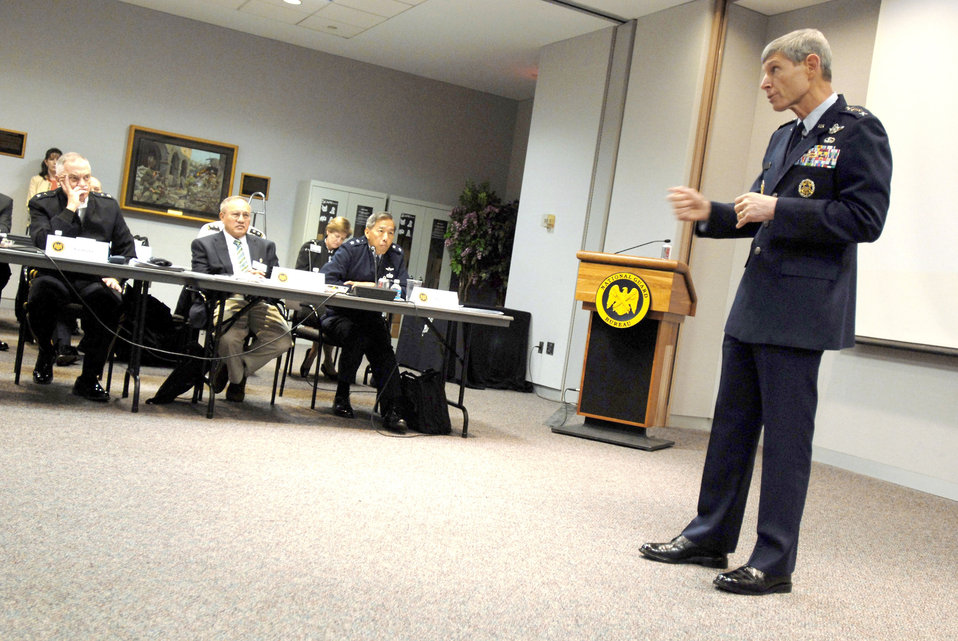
General Schwartz

Air Force Chief of Staff Gen. Norton Schwartz addresses the National Guard's top officers and enlisted leaders Feb. 28, 2011, during the 2011 General Senior Leadership Conference at in Arlington, Va.